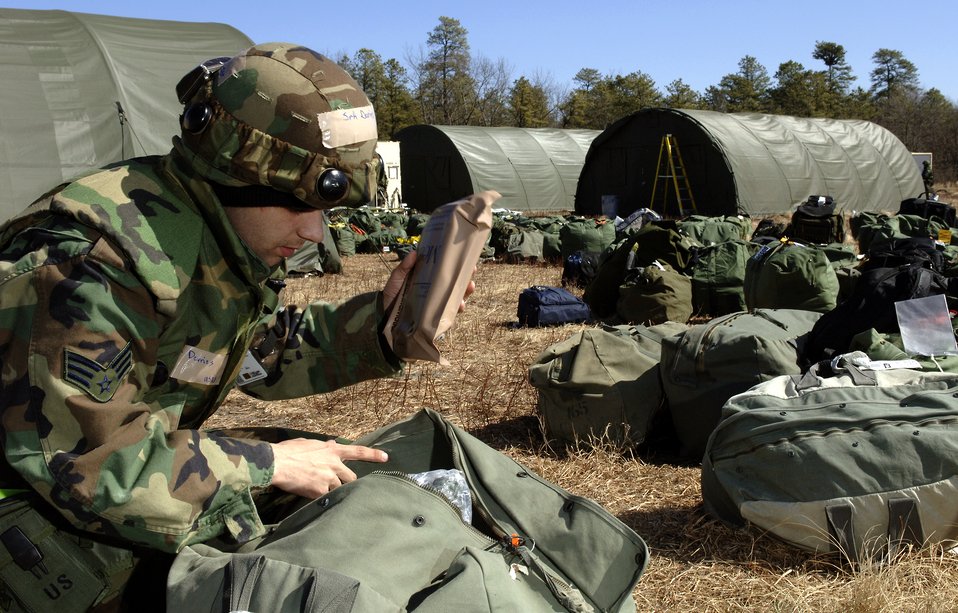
Exercise Eagle Flag

Senior Airman Erik Devries inventories his deployment bag supplies Sunday, March 5, 2006. Airman Devries is participating in the humanitarian relief operations at Exercise Eagle Flag at the Naval Air Engineering Station in Lakehurst, N.J. He is a food services specialist with the 347th Services Squadron at Moody Air Force Base, Ga.